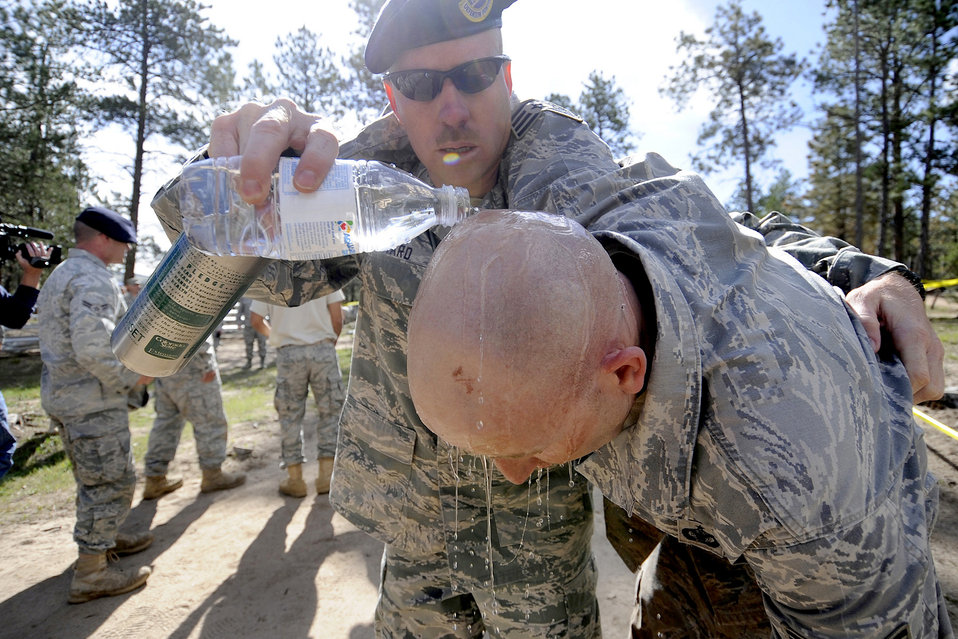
Trying to be cool

Master Sgt. Garrett Maynard pours water over the head of Staff Sgt. Andrew Lewis May 18, 2020, following the obstacle course run at the U.S. Air Force Academy during Air Force Space Command's Guardian Challenge 2010. The Airmen are with the 50th Security Forces Squadron at Schriever Air Force Base, Colo.